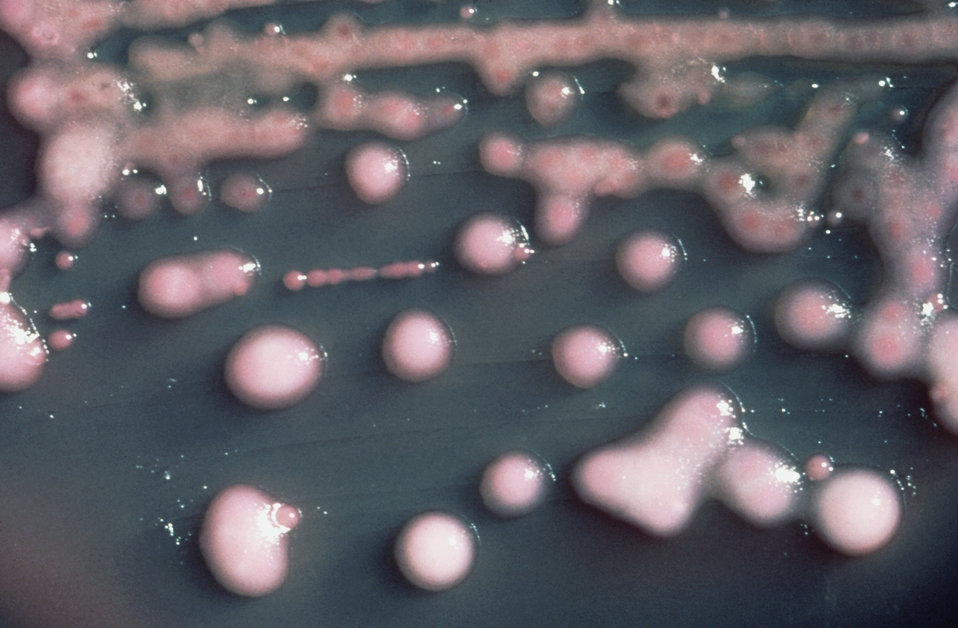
This inoculated MacConkey agar culture plate cultivated colonial growth of Gram-negative, small rod-shaped and facultatively anaerobic Klebsiella pneumoniae bacteria.